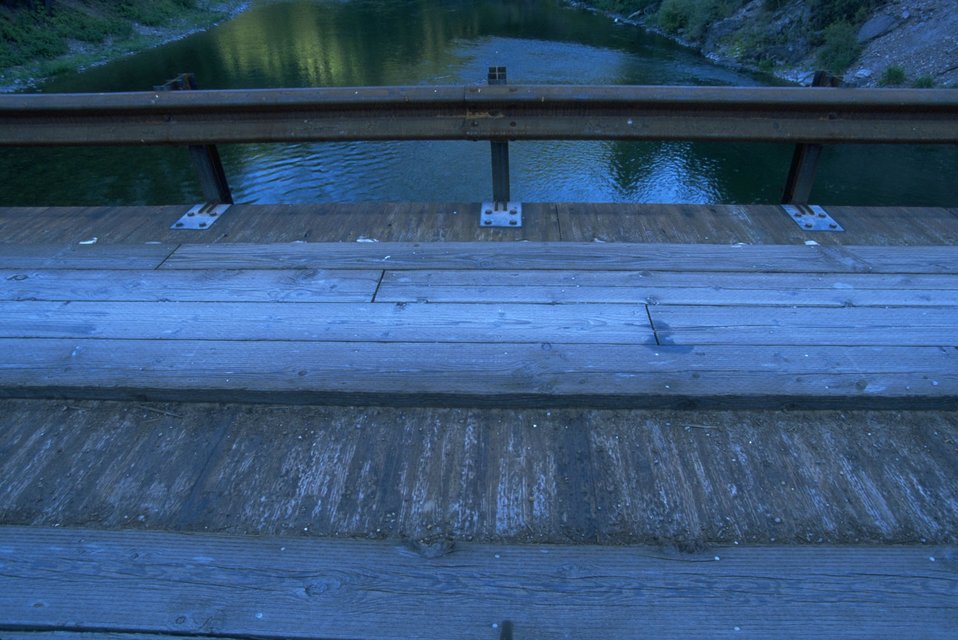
Whitaker Bridge on Blackfoot River